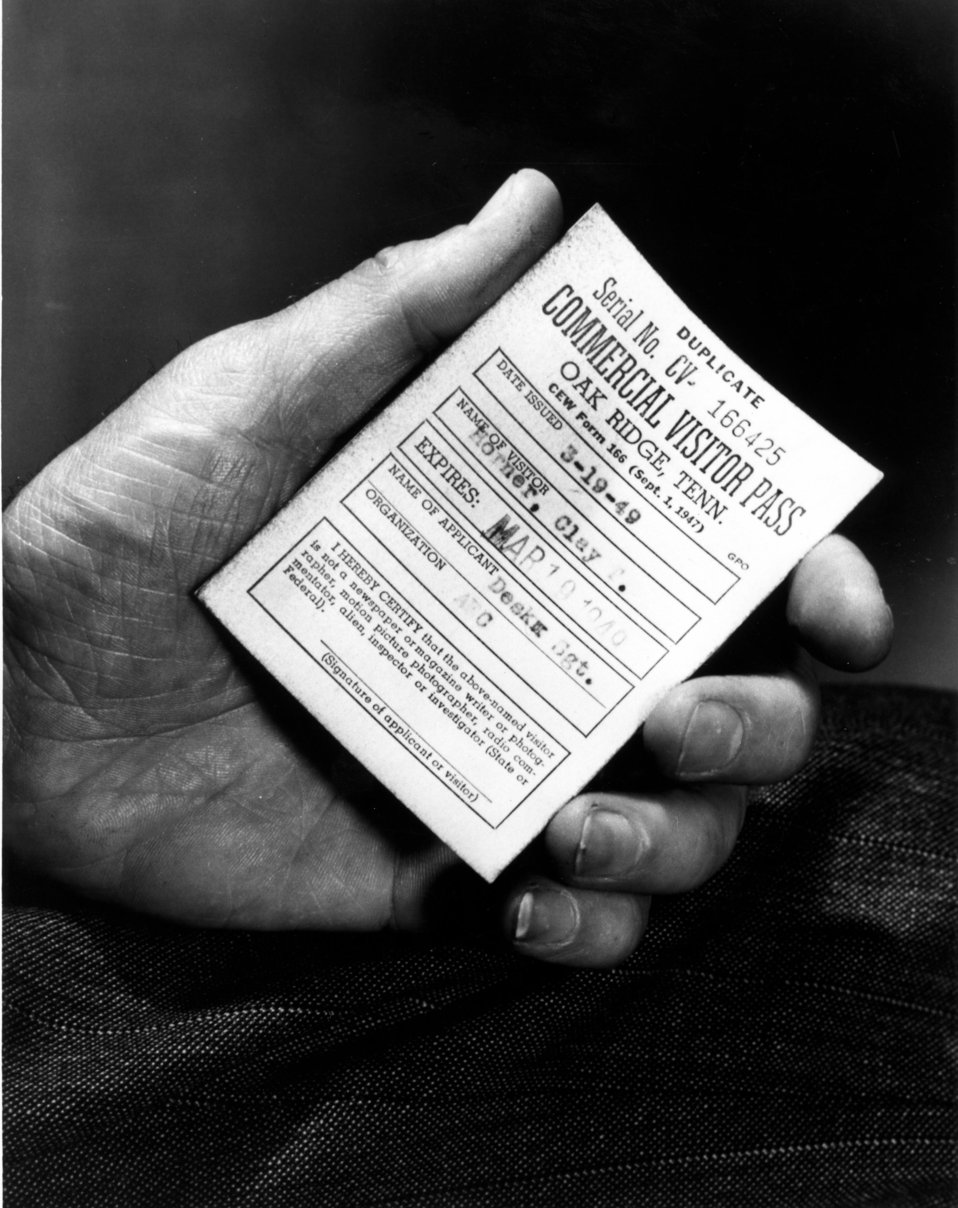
Daily Life at Oak Ridge